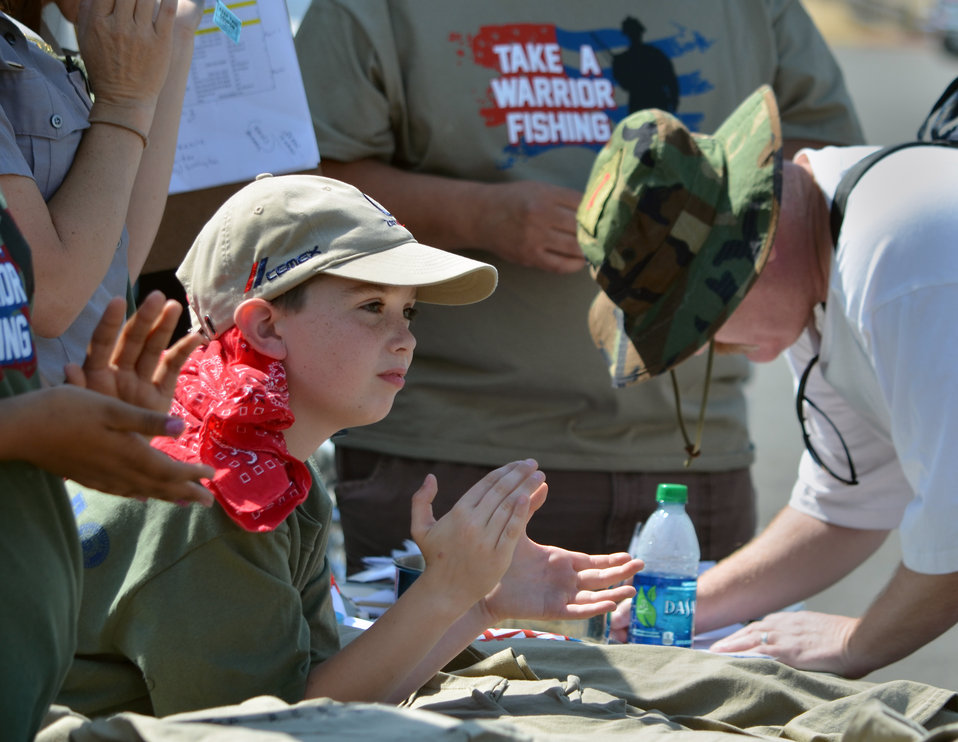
Applauding warriors (“Take a Warrior Fishing” event at Success Lake)

A young volunteer applauds wounded warriors and their families as they arrive to enjoy a day fishing during the 'Take a Warrior Fishing' event at Success Lake, located near Porterville, Calif., May 4, 2013. This is the second year the U.S. Army Corps of Engineers Sacramento District has hosted the event. Photo cropped for emphasis.